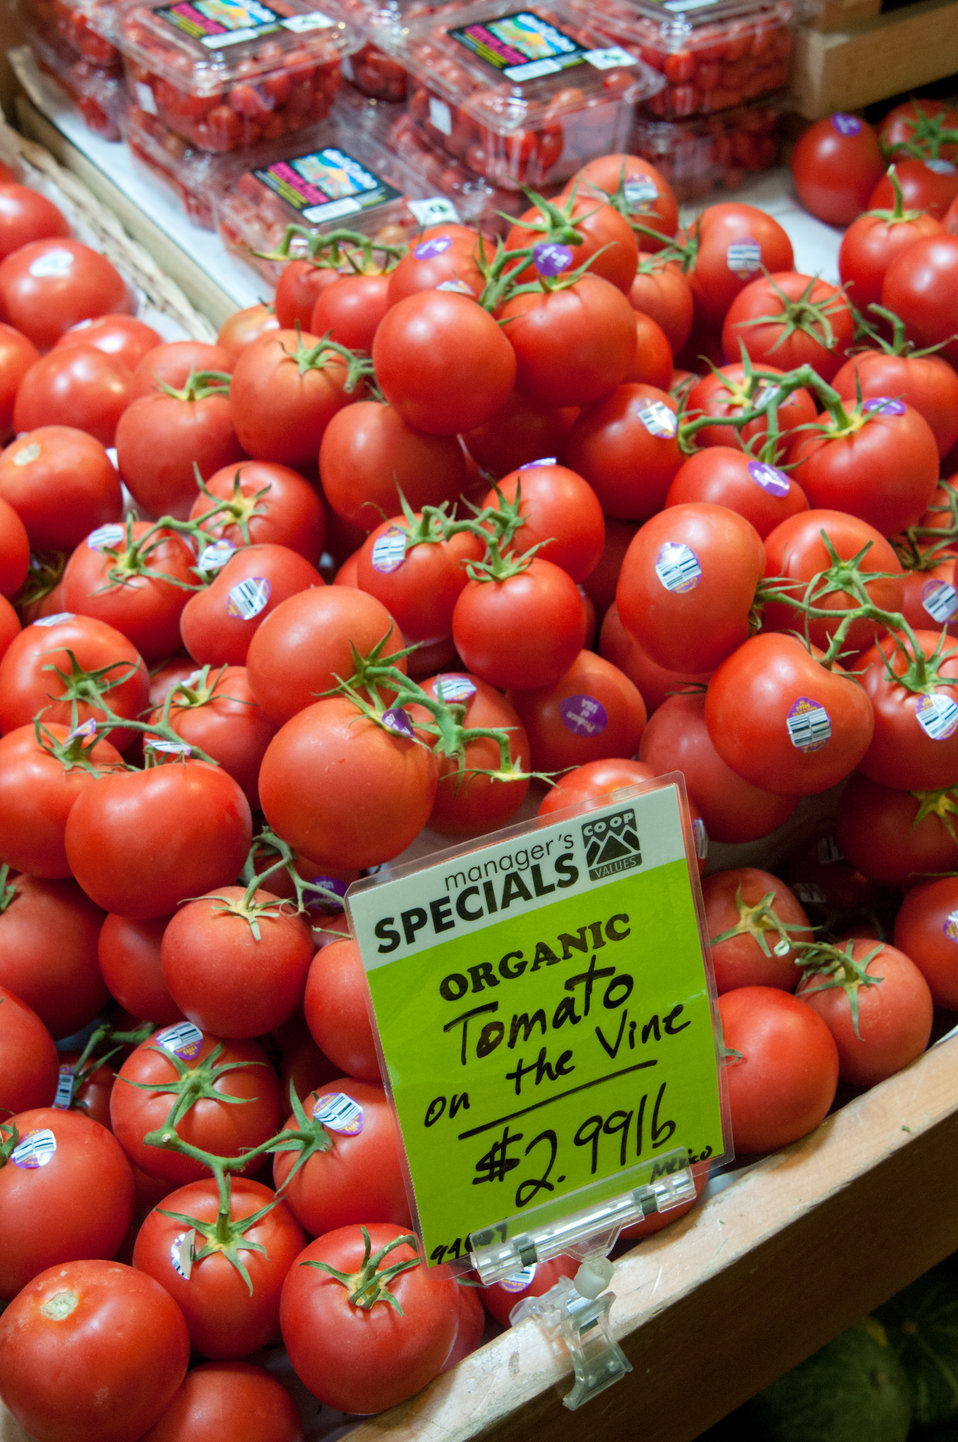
Organic tomatoes on display at the La Montanita Co-op in Albuquerque, NM. La Montanita is a 17,000 member socially responsible, locally owned food cooperative that supports a stable market for local farmers and producers of sustainable and organic regional/local agriculture in Albuquerque, NM. The co-op has a distribution center and two stores in Albuquerque; Valley and Nob Hill and stores in Santa Fe and Gallup, NM.